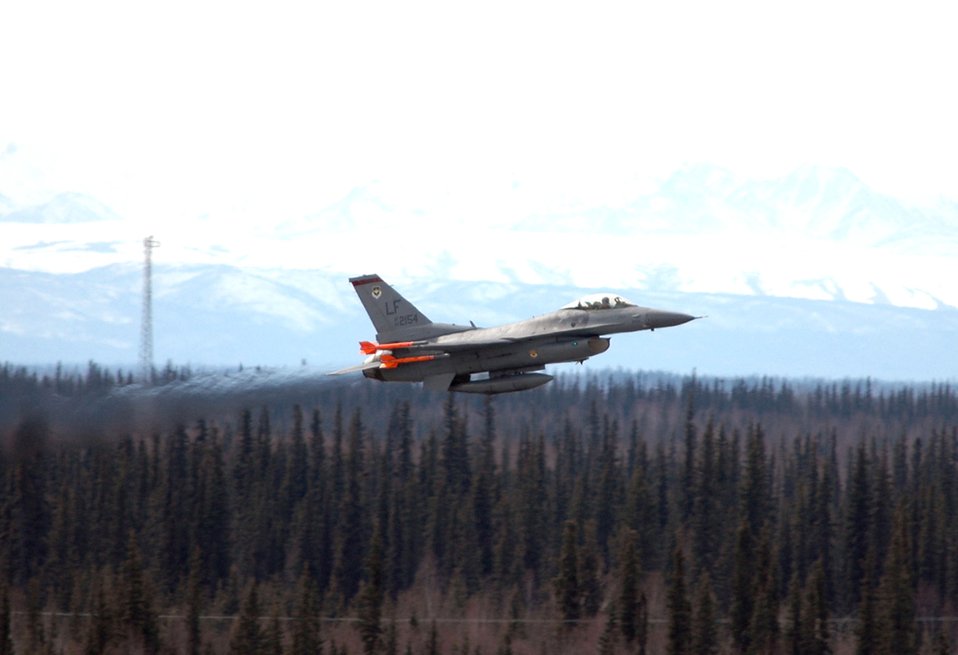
Aggressors vs. friendlies

An F-16 Fighting Falcon from the 63rd Fighter Squadron at Luke Air Force Base, Ariz., takes off from Eielson AFB, Alaska, during a familiarization flight at Red Flag-Alaska 06-2.